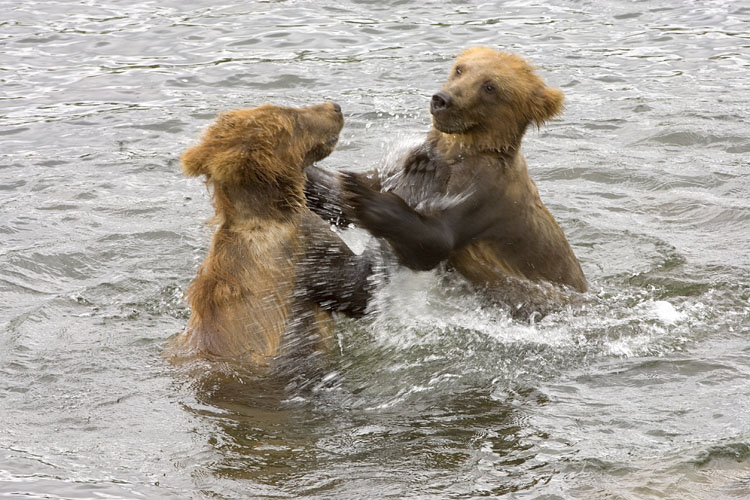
KOD Hildebrand (7)

Kodiak National Wildlife Refuge- Wildlife